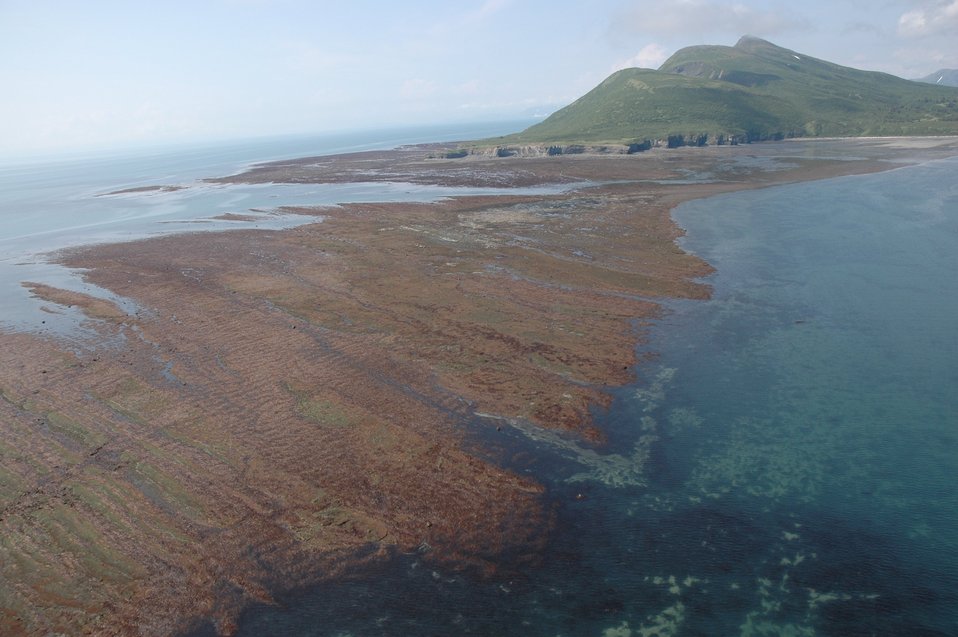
Aerial photograph. Tignavik Point on Ursus Cove. At low tide the extent of land extends far offshore from the high-tide line. Brownish-red algae covered rock is seen in the foreground.